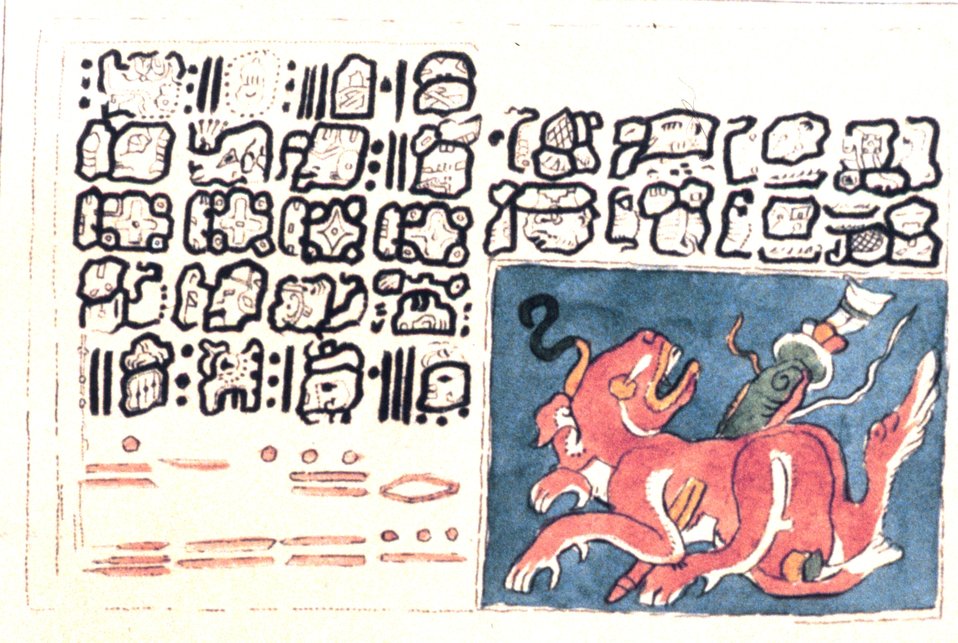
'Fragments of a Hieroglyphical MS at Dresden,' in: 'Researches Concerning the Institutions and Monuments of the Ancient Inhabitants of America,' by Alexander von Humboldt and translated by Helen Maria Williams, 1814. Vol. II, p. 144. Library Call Number C/gLH919.